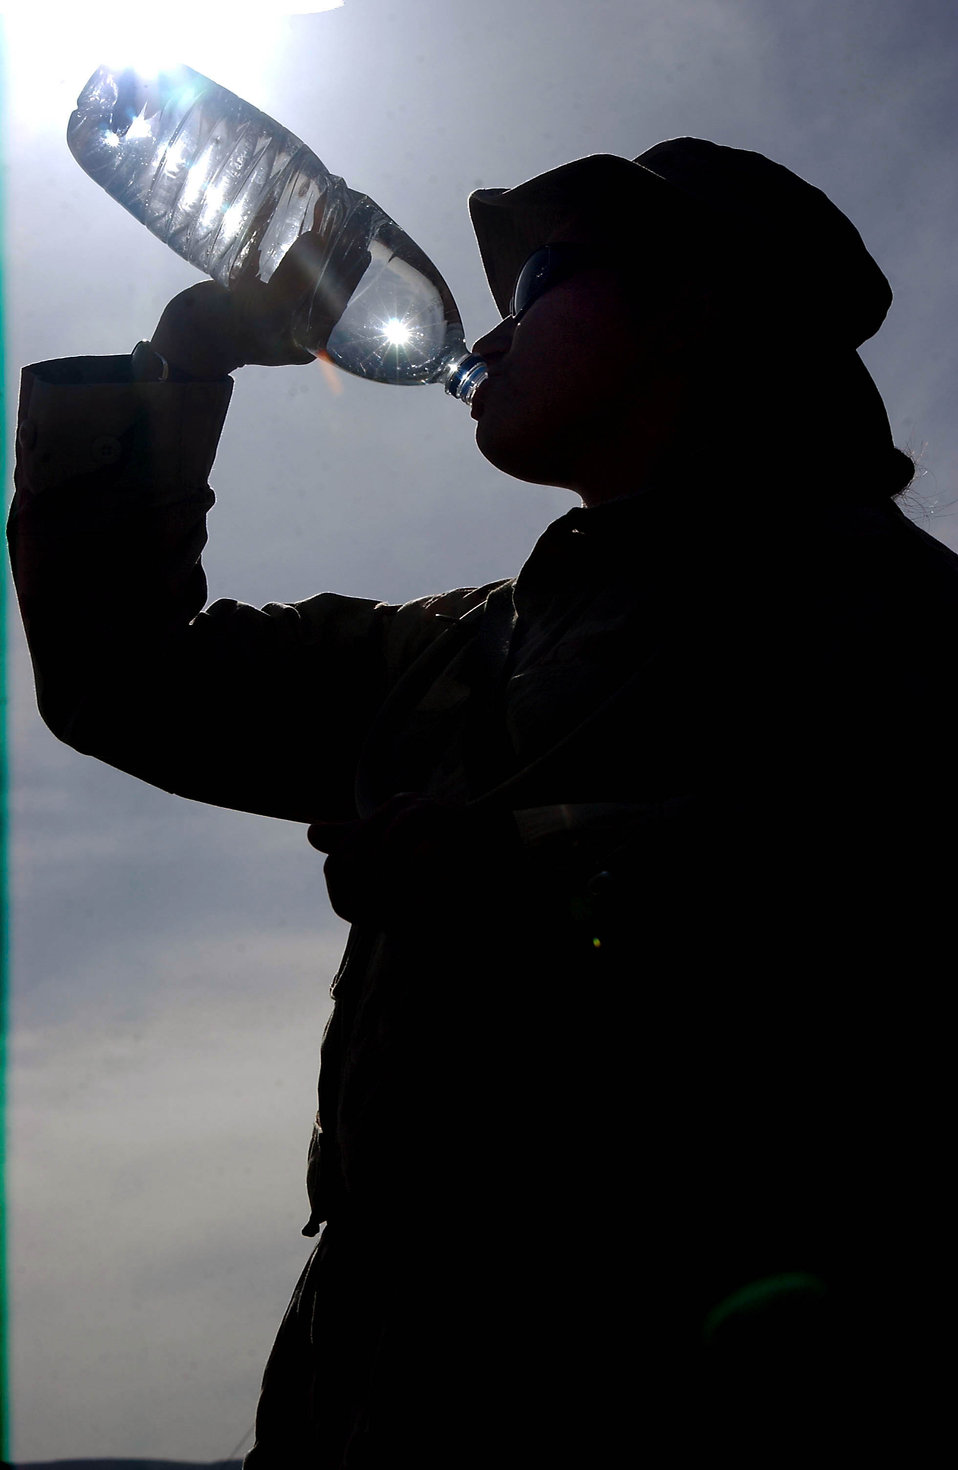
Thristy

OPERATION IRAQI FREEDOM -- Staff Sgt. Sabrina Hauser takes a long drink of bottled water at Bashur Airfield in northern Iraq. Drinking bottled water keeps the risk of disease down. Hauser is a videographer with the 1st Combat Camera Squadron at Charleston Air Force Base, S.C.